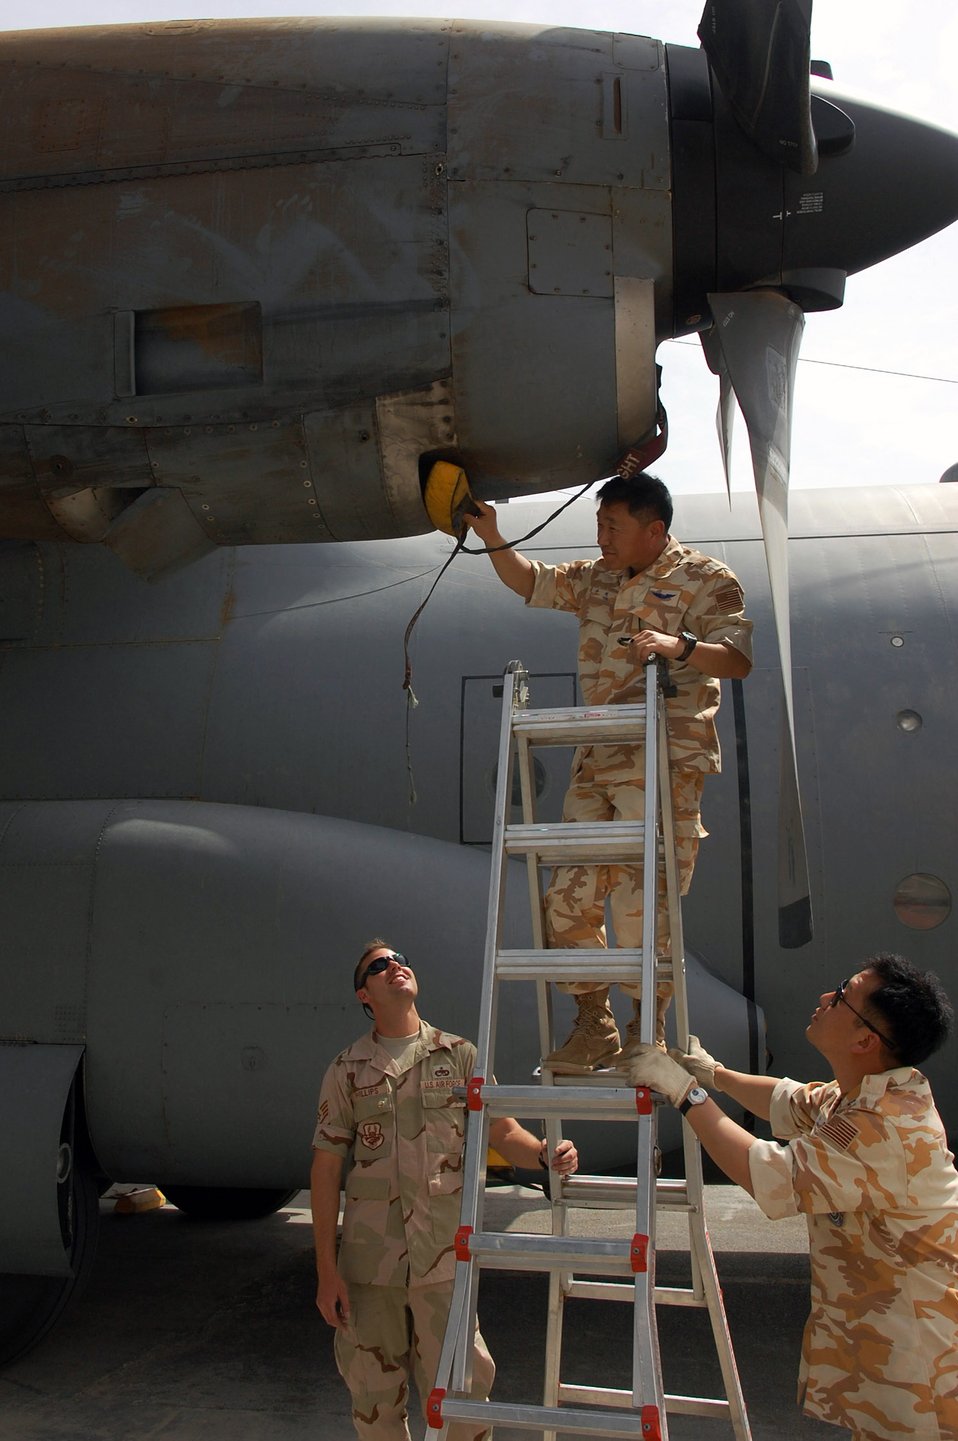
Coalition maintainers keep C-130 in the fight

South Korean Warrant Officer Hae Ok Yoon (center) inserts an oil cooler intake plug into a C-130 Hercules while Staff Sgt. William Phillips (left) and South Korean Master Sgt. Jun Wan Park keep the ladder steady for him March 26 at a Southwest Asian air base. Airmen from the U.S., Japanese Air Self-Defense Force and South Korean air force's 58th Airlift Wing participated in a coalition maintenance exchange program allowing maintainers to sharpen their skills, exchange ideas, and promote closer relations among coalition air forces supporting the war on terrorism. Warrant Officer Yoon and Sergeant Park are from the South Korean air force's 58th Airlift Wing, and Sergeant Phillips is a crew chief deployed to the 386th Expeditionary Aircraft Maintenance Squadron.